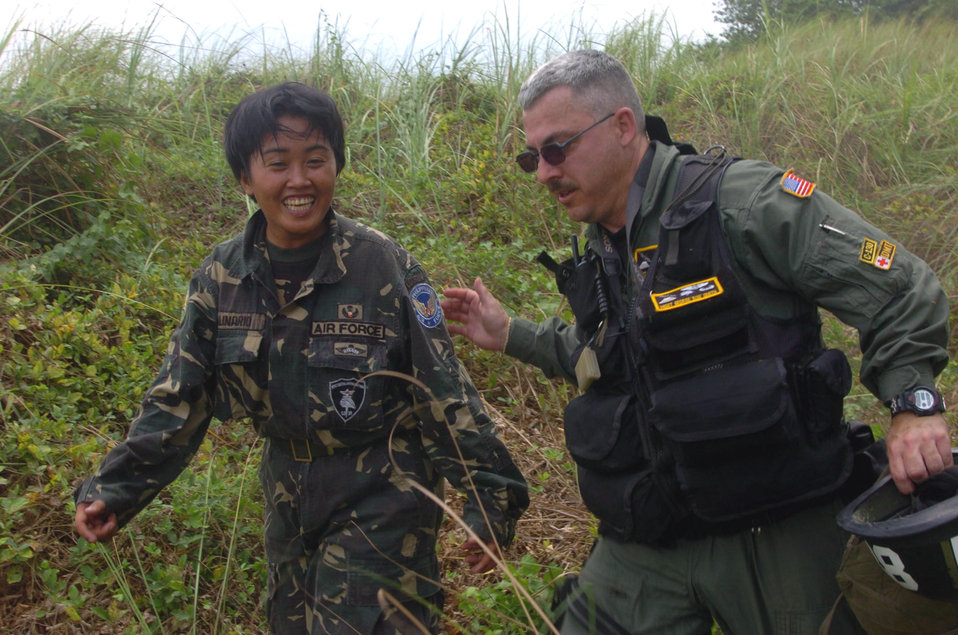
Balikatan 2004

BASA AIR BASE, Philippines -- Master Sgt. George Smith walks with Airwoman Cherry Ann Apolinario of the Philippine air force after she jumped from a C-130 Hercules on Feb. 25 during exercise Balikatan 2004 here. Sergeant Smith is a medical technician from the 36th Airlift Squadron at Yokota Air Base, Japan. Balikatan is an annual bilateral exercise that demonstrates U.S. resolve and commitment to train, advise and assist the Philippine government.